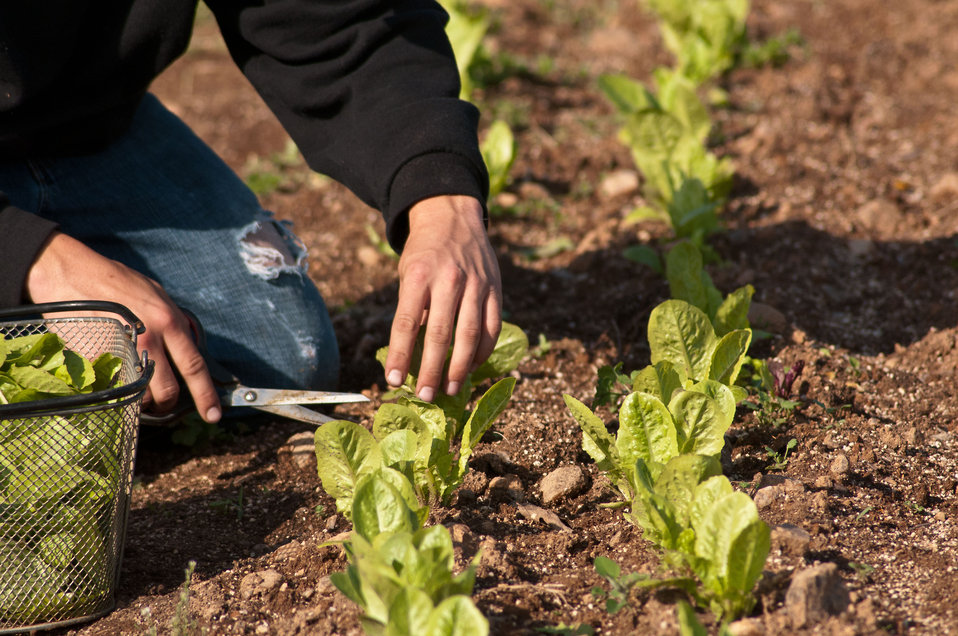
Andrew Myers gently harvest baby-lettuce leaves forManakintowne Specialty Growers, a 21-acre farm in Powhatan County, Virginia, on Friday, May 6, 2011. The farm where Jo Pendergraph, her family and team raise specialty produce for chefs and markets of Richmond, Charlottesville and Williamsburg, VA area. This includes the online food hub of Lulus Local Food served by the Fall Line Farms cooperative. This is one of the farms that chefs get those seemingly unique greens such as French Sorrel, Pea Shoots, Frisee, Tat soi, Mizuna, Pink/green radish shoots, Sunflower shoots, Baby red mustard, Tuscan Kale, Beet greens. All harvested by hand and scissors. As well as micro greens such as Pak choi, Tat soi, Mizuna, Purple kohlrabi, Shungiku (edible chrysanthemum), Ruby chard, Purple/Daikon/Triton radish, Red amaranth and Bull's Blood Beet. Edible flowers such as African Blue Basil, Nasturtiums, Johnny Jump Ups, and Chive blossoms Dianthus (pinks) are grown here. The seasonal choices are listed by suppliers and ordered by members on Lulus Local Food website, the food is distributed to pick-up points in the Richmond, VA area. They also offer a wide variety of household food staples and specialty fruits, vegetables, meats, soaps, eggs, cheeses, flowers, honey, pastas, sauces, syrups, baked goods, mushrooms, flour and grains from and for the Richmond. VA area.